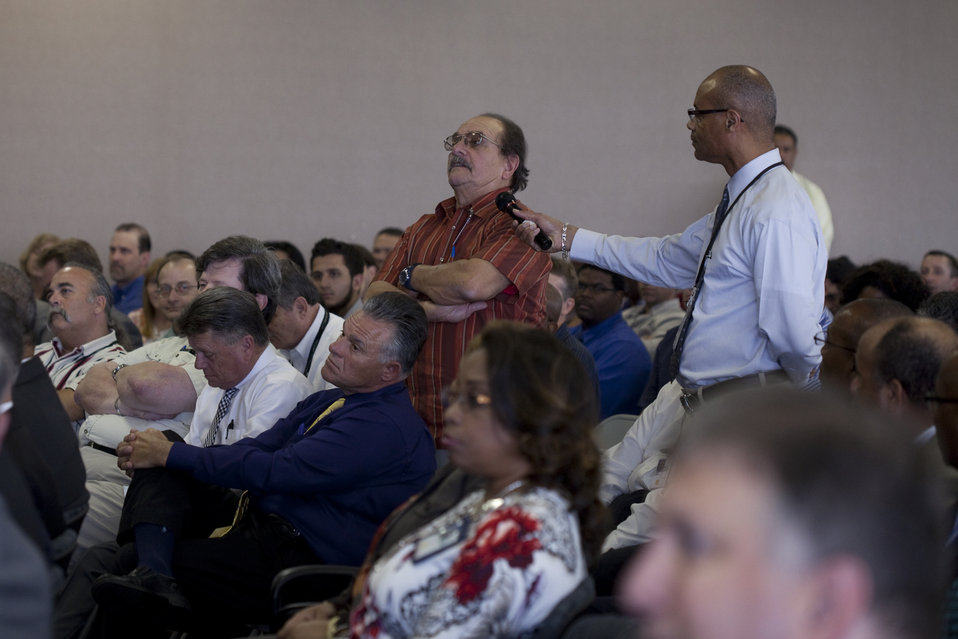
Agriculture Secretary Tom Vilsack spoke to employees at the National Finance Center in New Orleans, LA on Wednesday, May 1, 2013. Carl Maronella asks Secretary Vilsack a question during his time with the group.